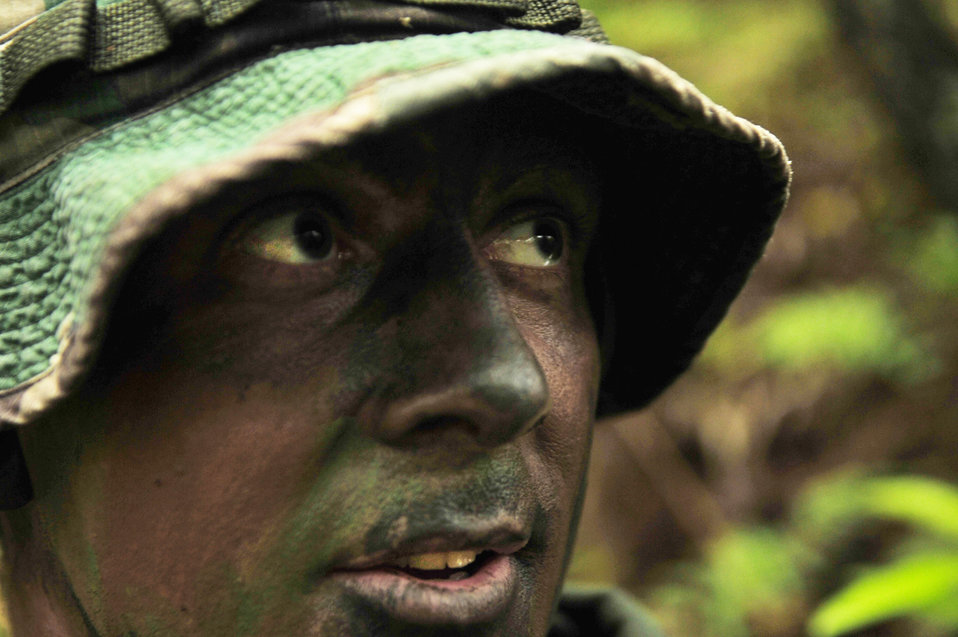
Survival and Evasion Training

Capt. Aaron Wallace, a pilot from the 909th Air Refueling Squadron, evades the